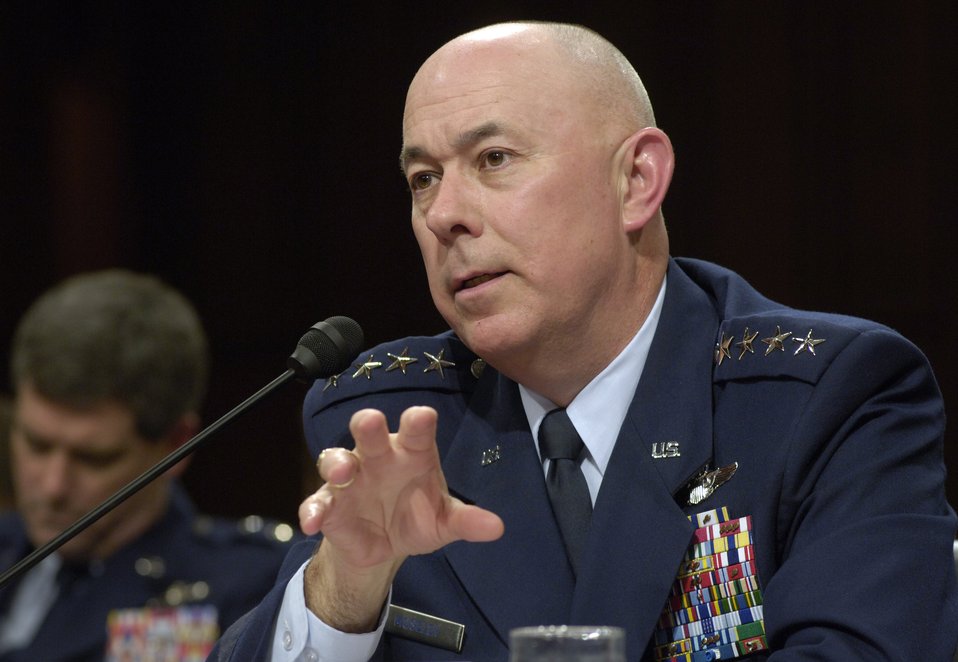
Testimony on Capitol Hill

Air Force Chief of Staff Gen. T. Michael Moseley answers questions during a Senate Armed Services Committee hearing Thursday, March 2, 2006, in Washington, D.C.